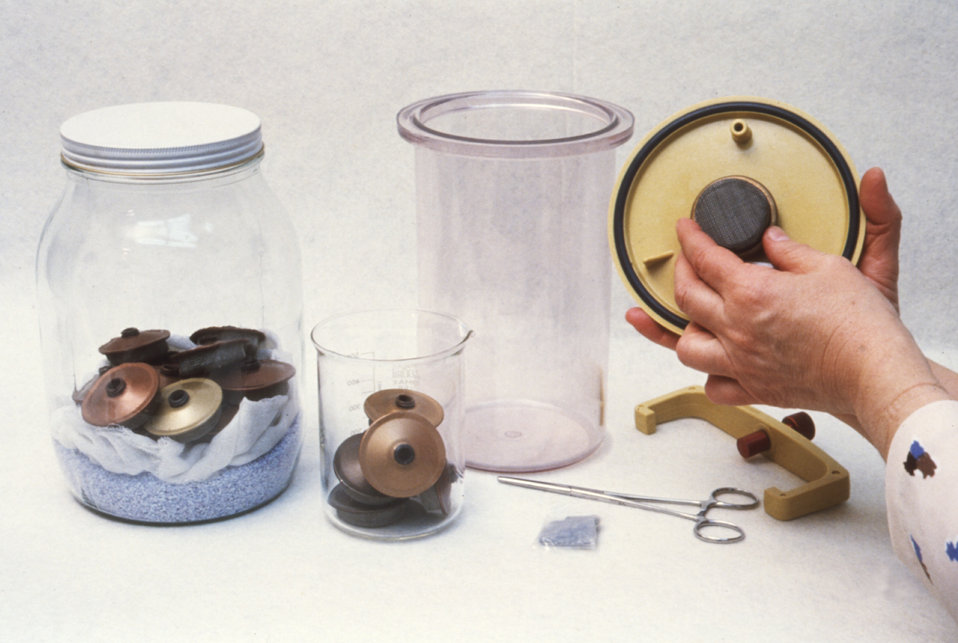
This is a photograph of an anaerobic jar (right) depicting the procedure for changing its catalyst screen.